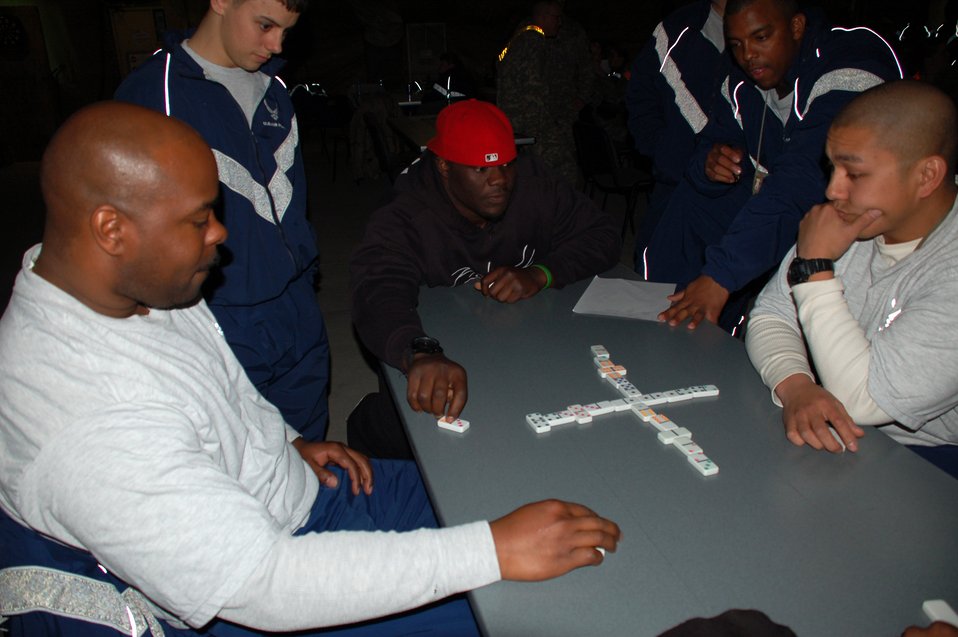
NFL players kick off USO tour in Kyrgyzstan

Tommie Harris of the Chicago Bears contemplates his next play during a friendly game of Dominoes with Staff Sgt. Brian Williams (left) and Staff Sgt. Anthony Mayuga March 4 at the recreation center on Manas Air Base, Kyrgyzstan. Harris, San Diego Chargers Luis Castillo, Carolina Panthers Mike Rucker and Sports Illustrated writer Peter King took park in the United States Organizations National Football League tour to visit servicemembers supporting the war. They participated in a question and answer session with the Airmen and Soldiers and Marines transiting the base, hanging around afterward to play games and sing Karaoke.